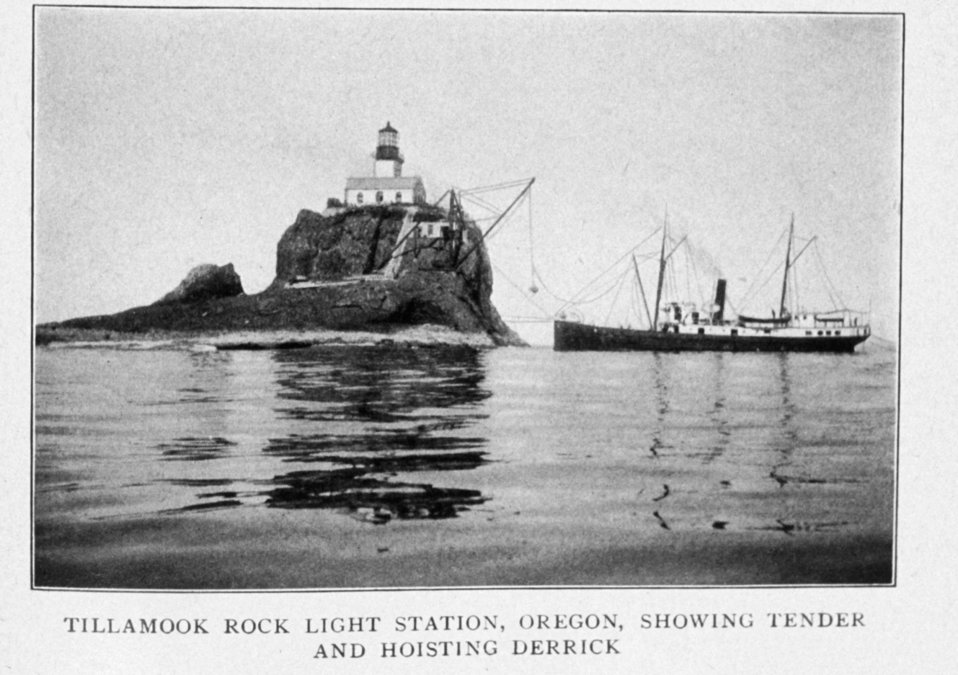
Tillamook Rock Light Station, Oregon, Showing Tender and Hoisting Derrick. In: 'Lighthouses and Lightships of the United States' by George R. Putnam, p. 130, 'Lighthouses and Lightships of the United States' by George R. Putnam, p. 130, 1917. Houghton Mifflin and Company, Boston. Library Call No. 527.7 P98.